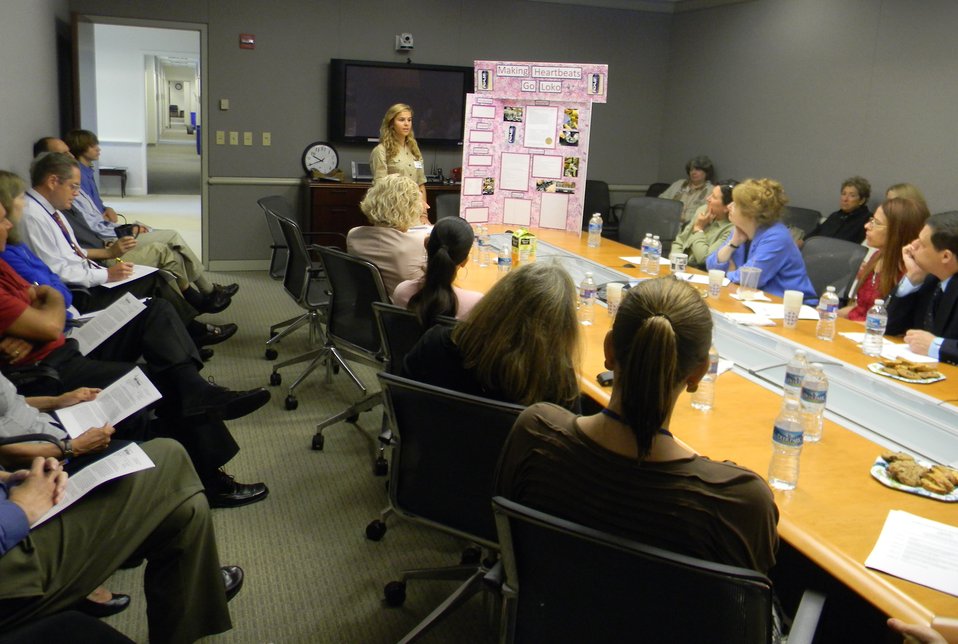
Schumacher presents2

Darby Kathryn Schumacher, 2nd place winner of the 2011 Addiction Science Awards, presents her study to NIDA scientists